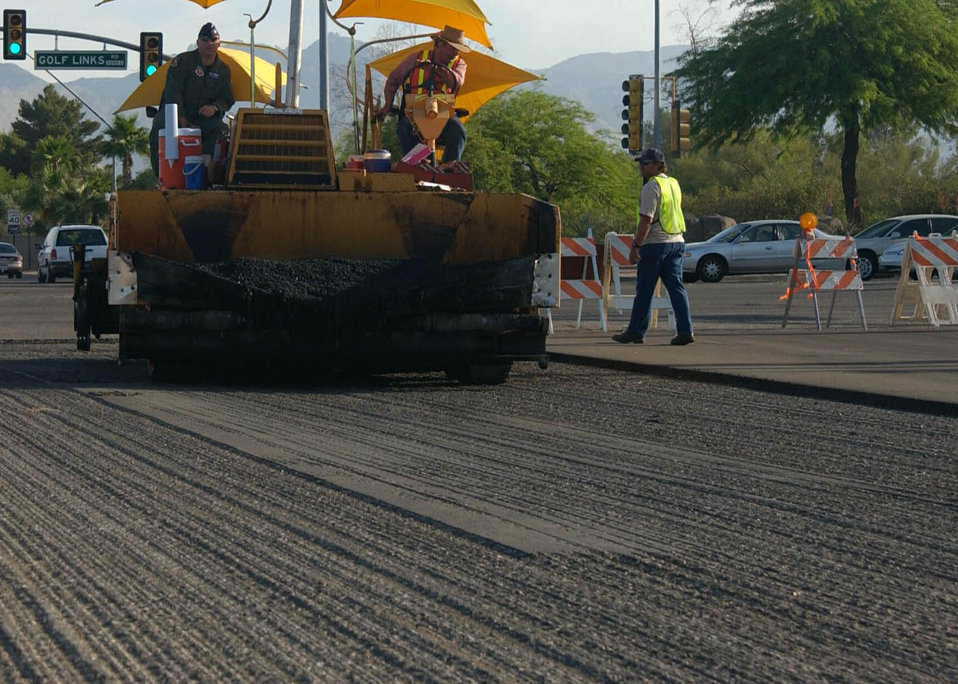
Pavement pounders

DAVIS-MONTHAN AIR FORCE BASE, Ariz. -- Col. Michael Spencer (left) and Ron Frayer use an asphalt lay-down machine to pave a new entrance to a gate here. Colonel Spencer is the 355th Wing commander, and Mr. Frayer is a contractor with the 355th Civil Engineer Squadron.